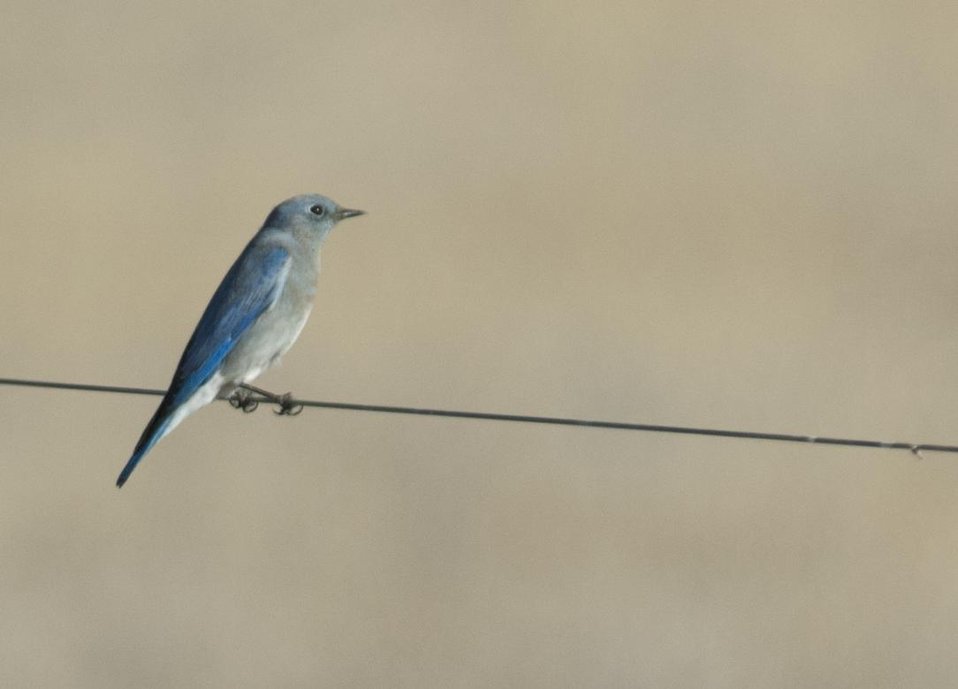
Western Bluebird, Carrizo Plain